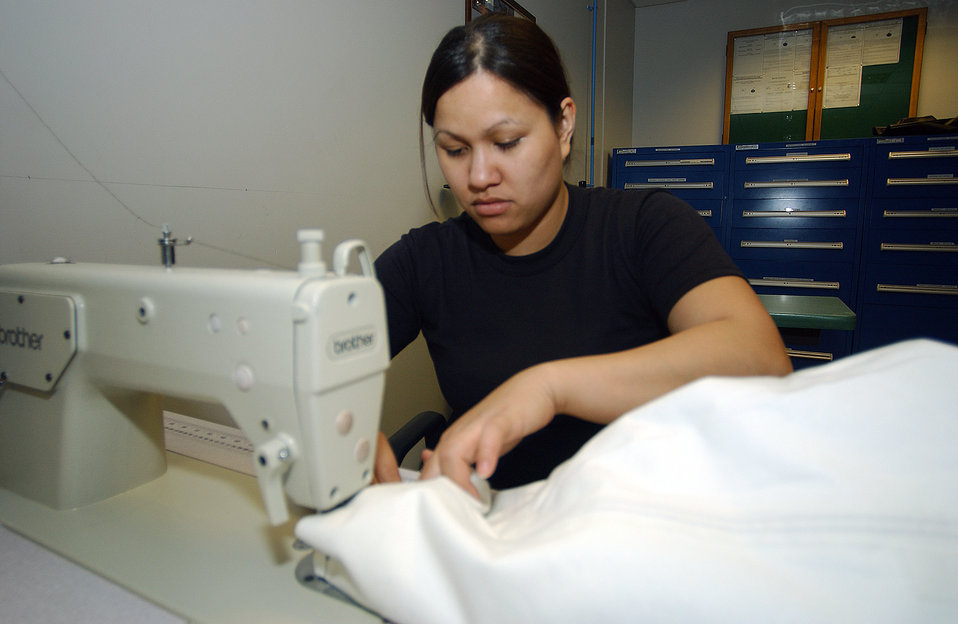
Putting together the pieces

ROYAL AIR FORCE LAKENHEATH, England -- Senior Airman Ladee Virell sews a sock to the leg of a anti-exposure suit here April 13. Airman Virell is a survival equipment maintenance technician with the 48th Equipment Maintenance Squadron.